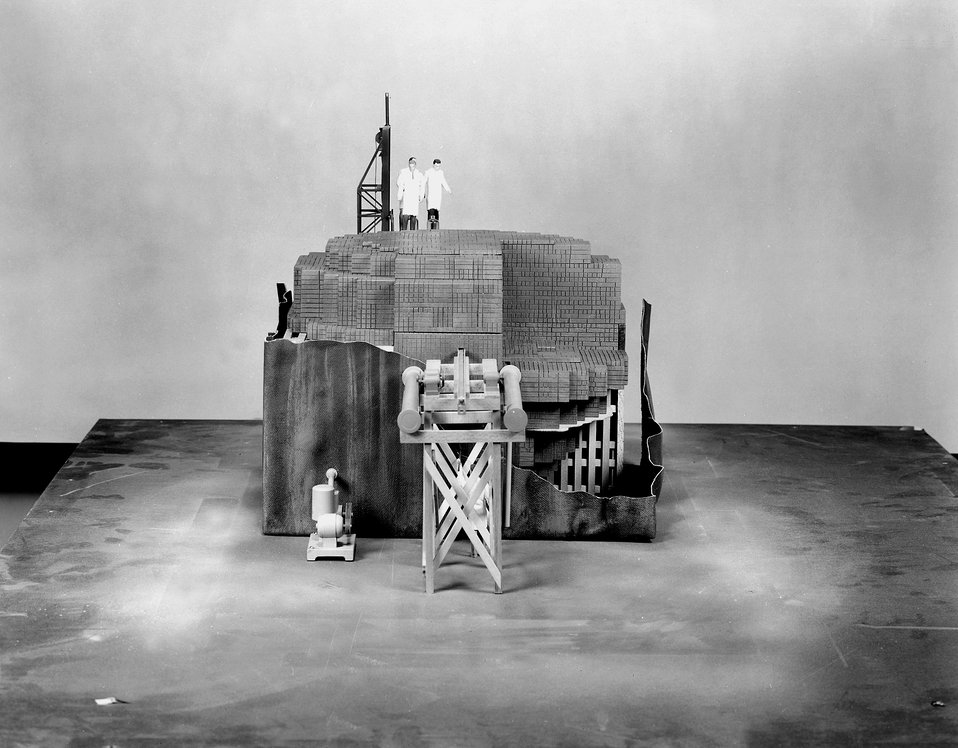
Closeup of scale model (1/2 in. = 1 ft.) of Cp-1 reactor temporarily removed from its West Stands racquets court environment...